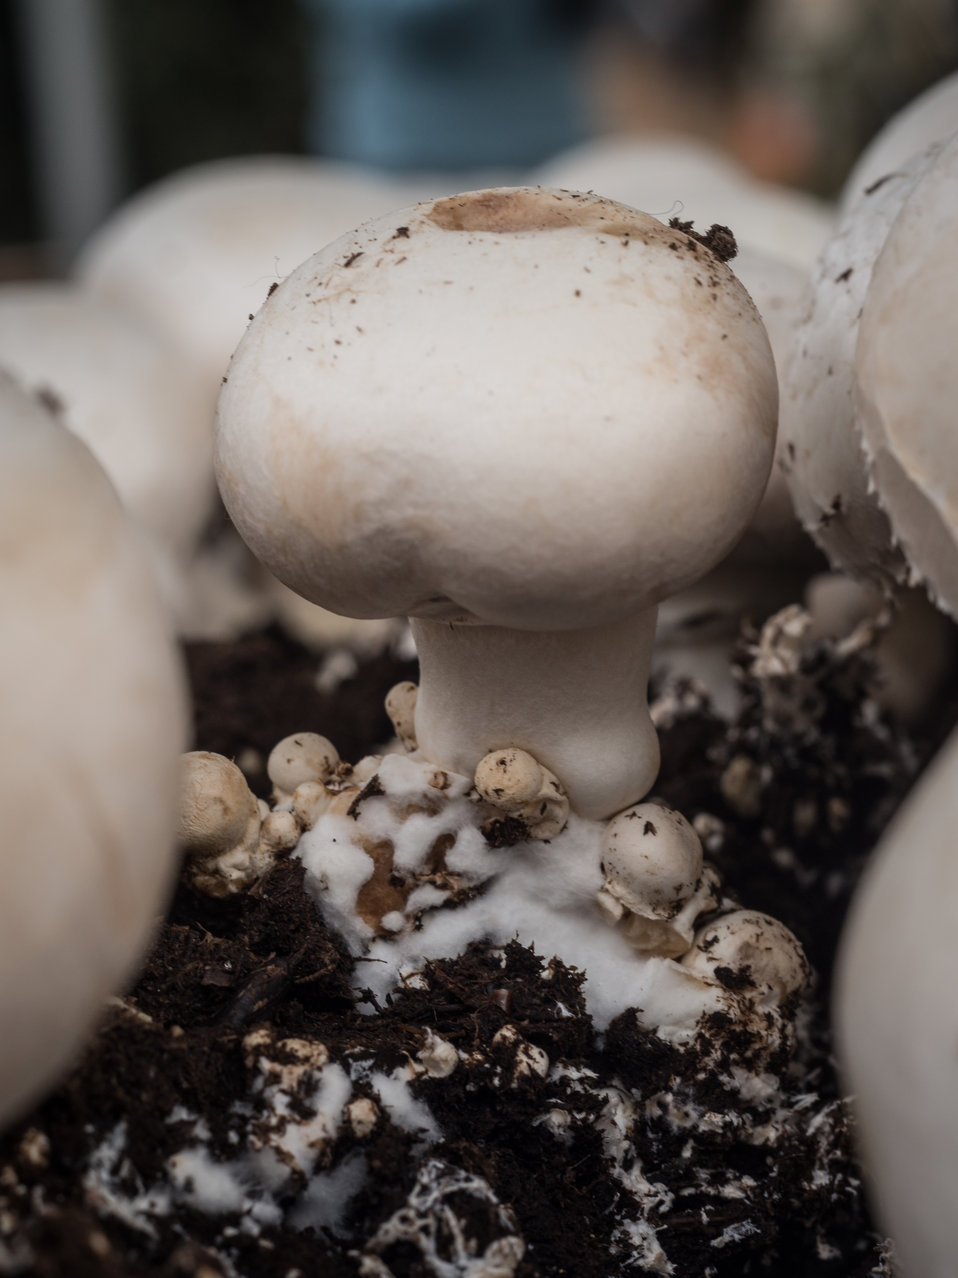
White button mushrooms on display at the U.S. Department of Agriculture (USDA) farmers markets and Harvest Festival at the USDA Whitten Building east parking lot in Washington, DC, on Friday, November 22, 2013.